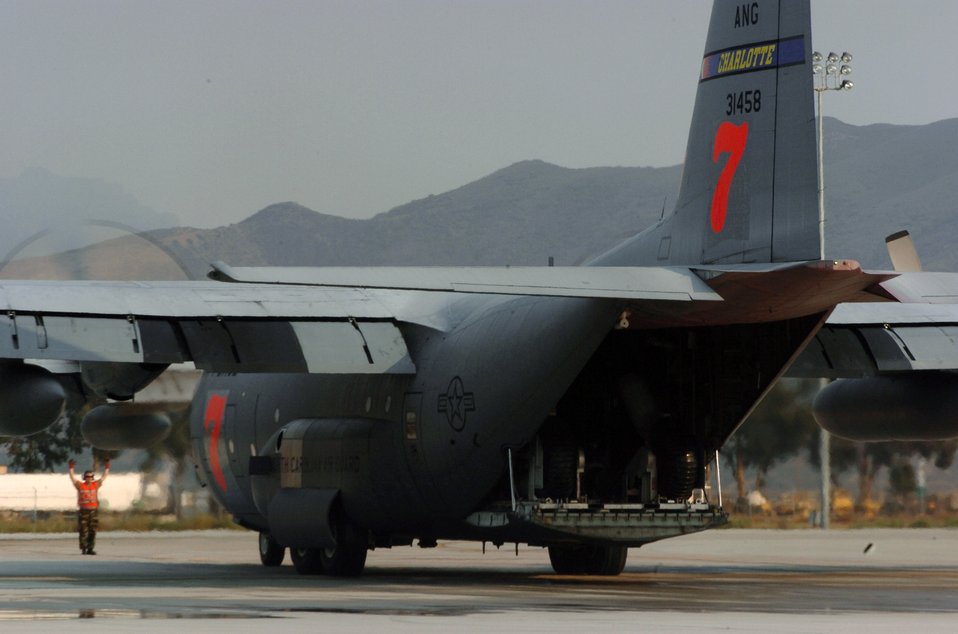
Airmen continue fight on Southern California wildfires

C-130 Hercules from the North Carolina Air National Guard's 145th Air Wing taxies on the flightline Oct. 25 at Naval Air Station Point Mugu, Calif. The aircraft is equipped with the Modular Airborne Firefighting System and is being used to fight wildfires in Southern California.